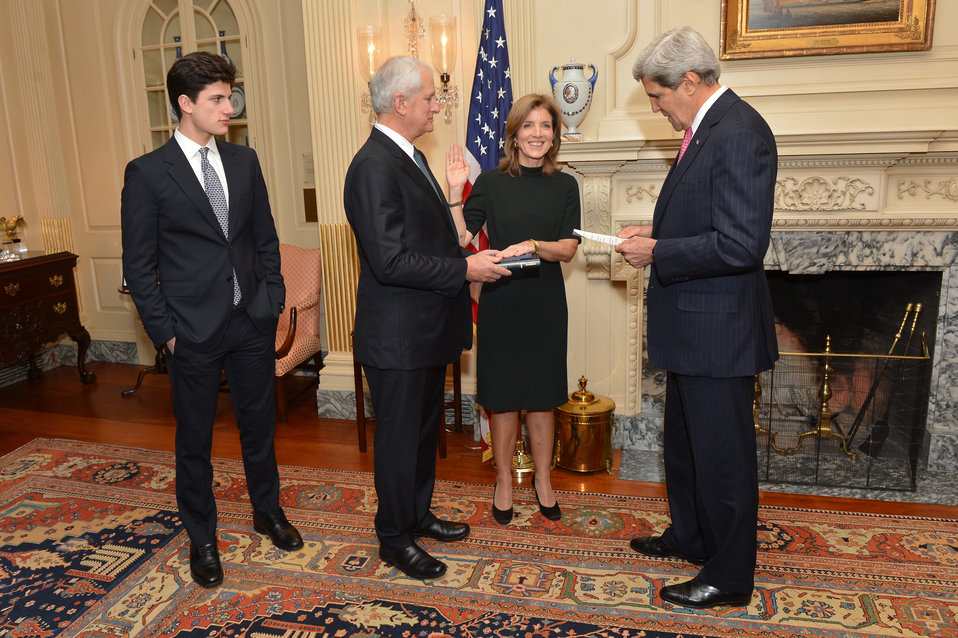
Secretary Kerry Hosts a Swearing-In Ceremony for Ambassador Kennedy

U.S. Secretary of State John Kerry swears in Caroline Kennedy as U.S. Ambassador to Japan at the U.S. Department of State in Washington, D.C., on November 12, 2013. Ambassador Kennedy is accompanied by her husband, Dr. Edwin Schlossberg, and son, John 'Jack' Schlossberg.